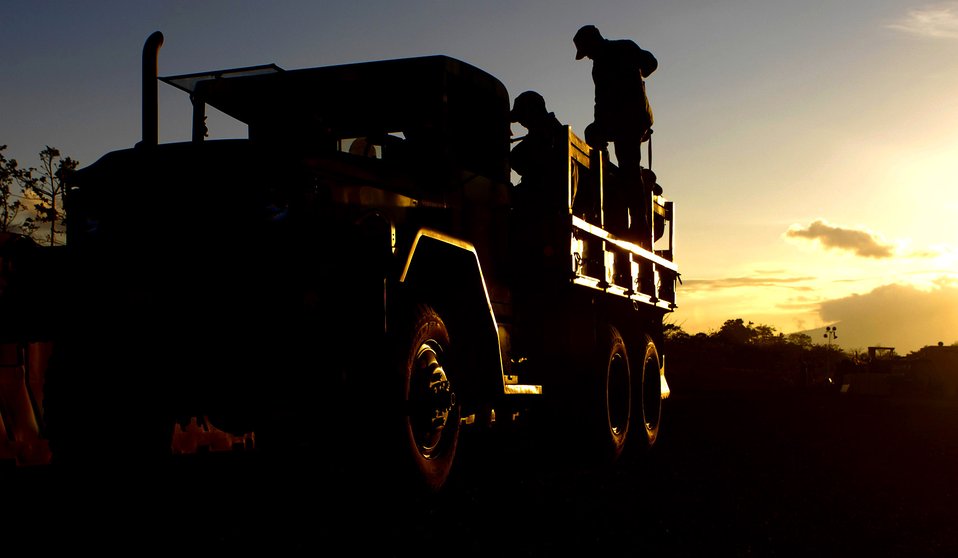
Getting an early start

Airmen from the 820th Expeditionary Red Horse Squadron at Nellis Air Force Base, Nev., board a two-ton truck in Buena Vista, Nicaragua, shortly before departing for a clinic construction site during New Horizons-Nicaragua 2007.